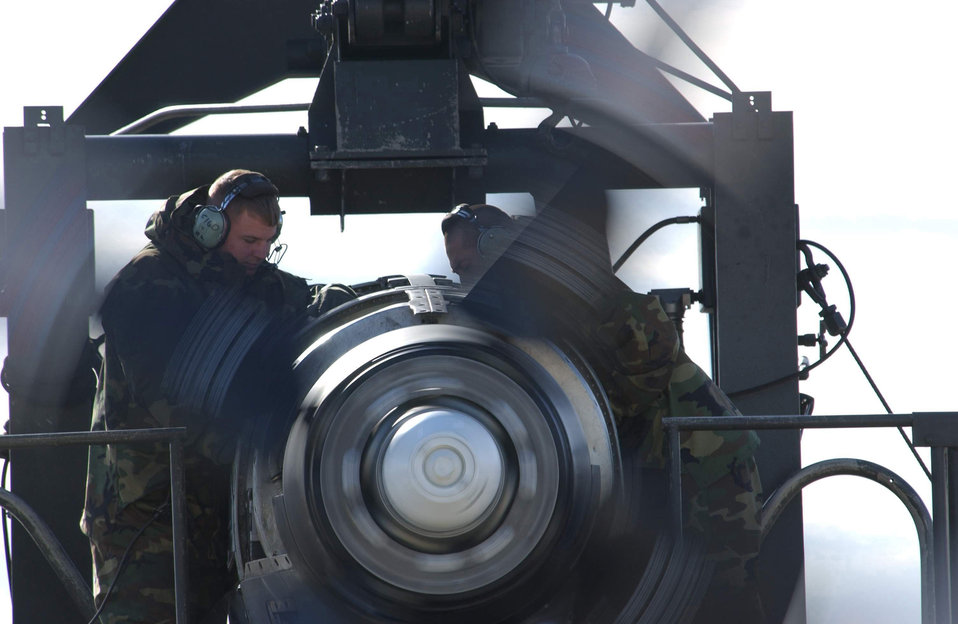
Oil check

YOKOTA AIR BASE, Japan -- Airman 1st Class Marc Steele, (left) and Airman Henry Patlan, aerospace propulsion technicians from the 374th Maintenance Squadron at Yokota, inspect a C-130 Hercules engine for oil and fuel leaks during a certification run. The C-130 primary mission is performing the tactical portion of the airlift mission. The aircraft is capable of operating from rough, dirt strips and is the prime transport for air dropping troops and equipment into hostile areas.